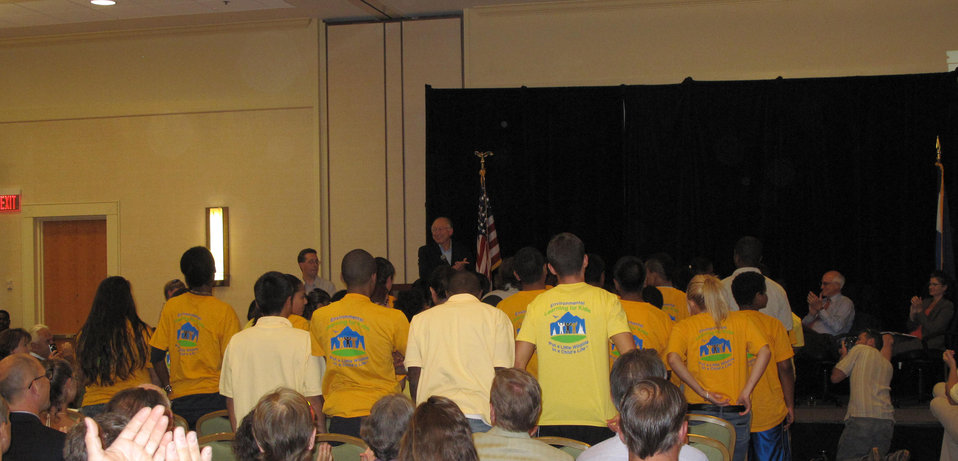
America's Great Outdoors Initiative

Secretary Salazar thanking Colorado youth for their passion for the environment.